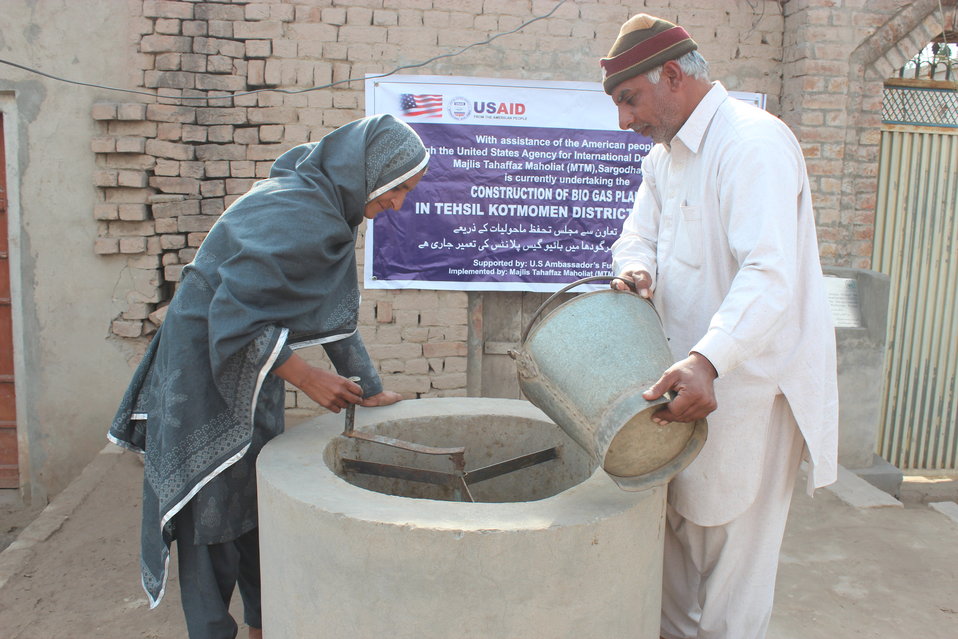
bio-gas (1)